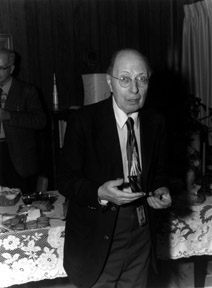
Eugene Wigner.